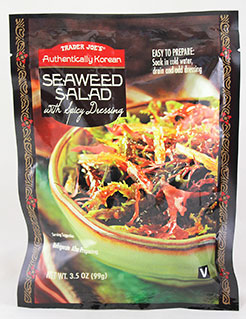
RECALLED – Seaweed salad

November 23, 2013 – Product Recall – Jayone Food Issues Voluntary Alert on Undeclared Peanuts in Dried Seaweed Salad.